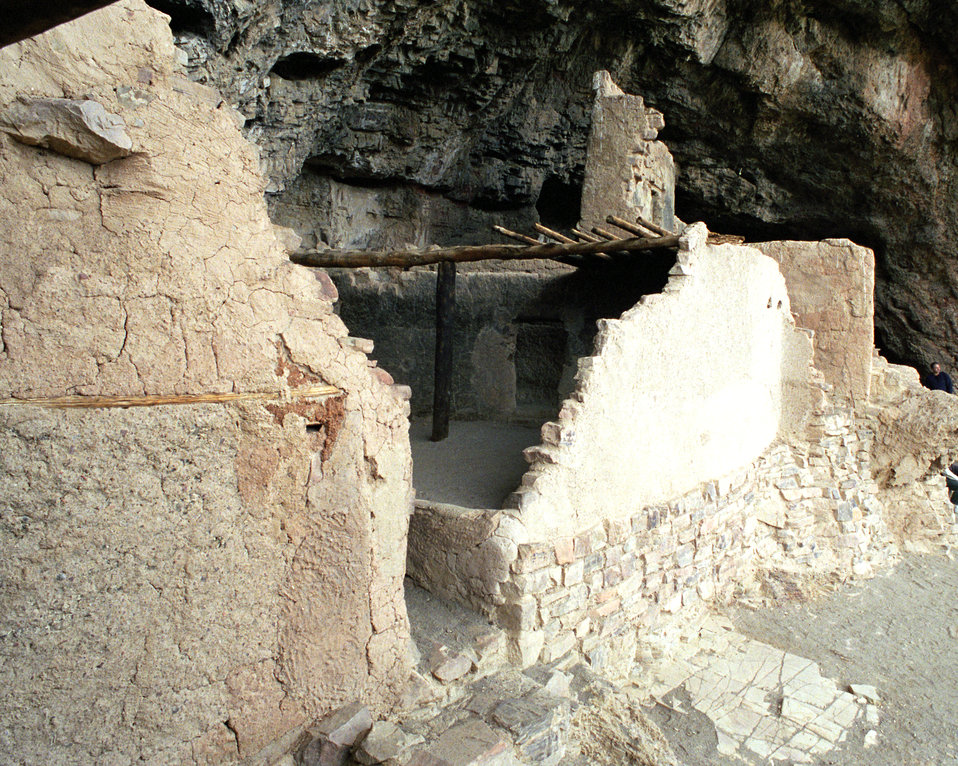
This photograph is of one of the two relatively intact cliff dwellings built by the Salado in the 14th Century in the Tonto Basin of the Tonto National Forest near Tucson, AZ on January 25, 2001. These Arizona cliff dwellings have beautiful multi-room living areas 2 stories tall and made of regional rock cemented together. Wood beams supported roofs and floors. Because of the dry clean atmosphere in those caves, the headers for doors and windows made of native wood have survived.